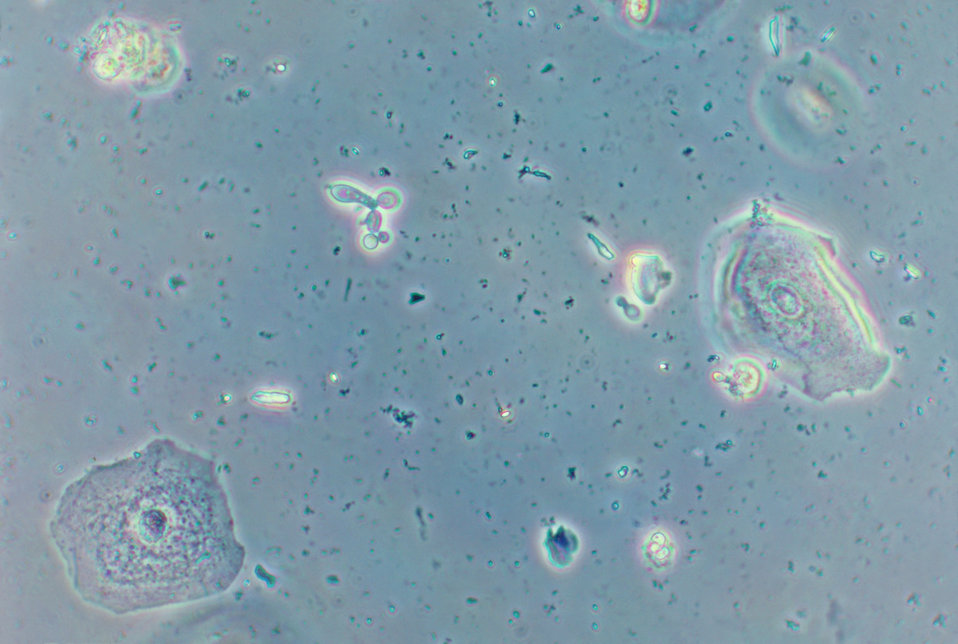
This photomicrograph of a vaginal smear identifies Candida albicans while using a wet mount technique.